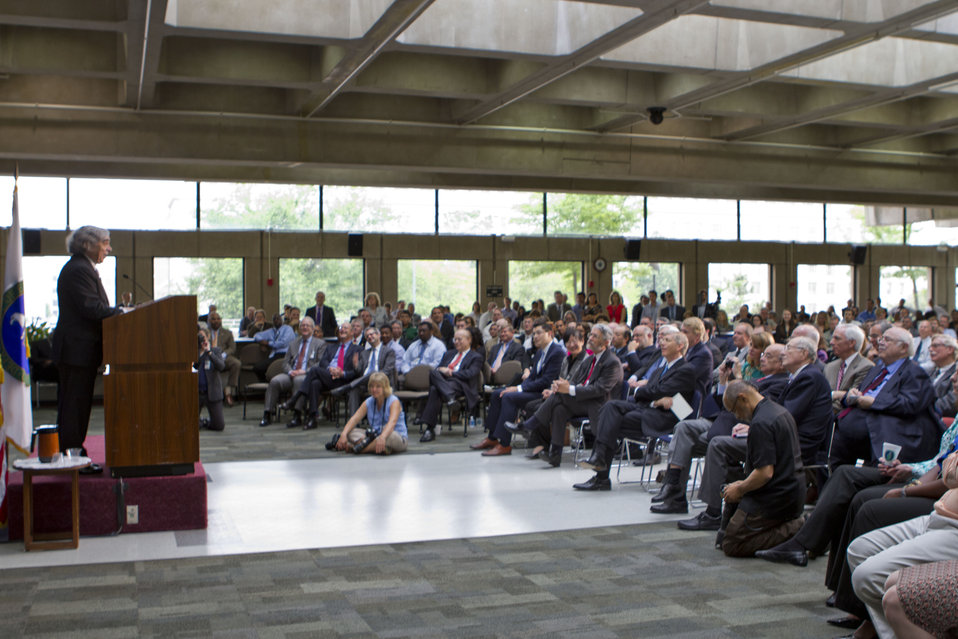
Secretary Moniz Takes the Stage

Shortly after taking his oath of office, Secretary of Energy Ernest Moniz delivered remarks to friends and colleagues at the Department of Energy in Washington, D.C. -- expressing his commitment to advancing President Obama’s all-of-the-above energy strategy.